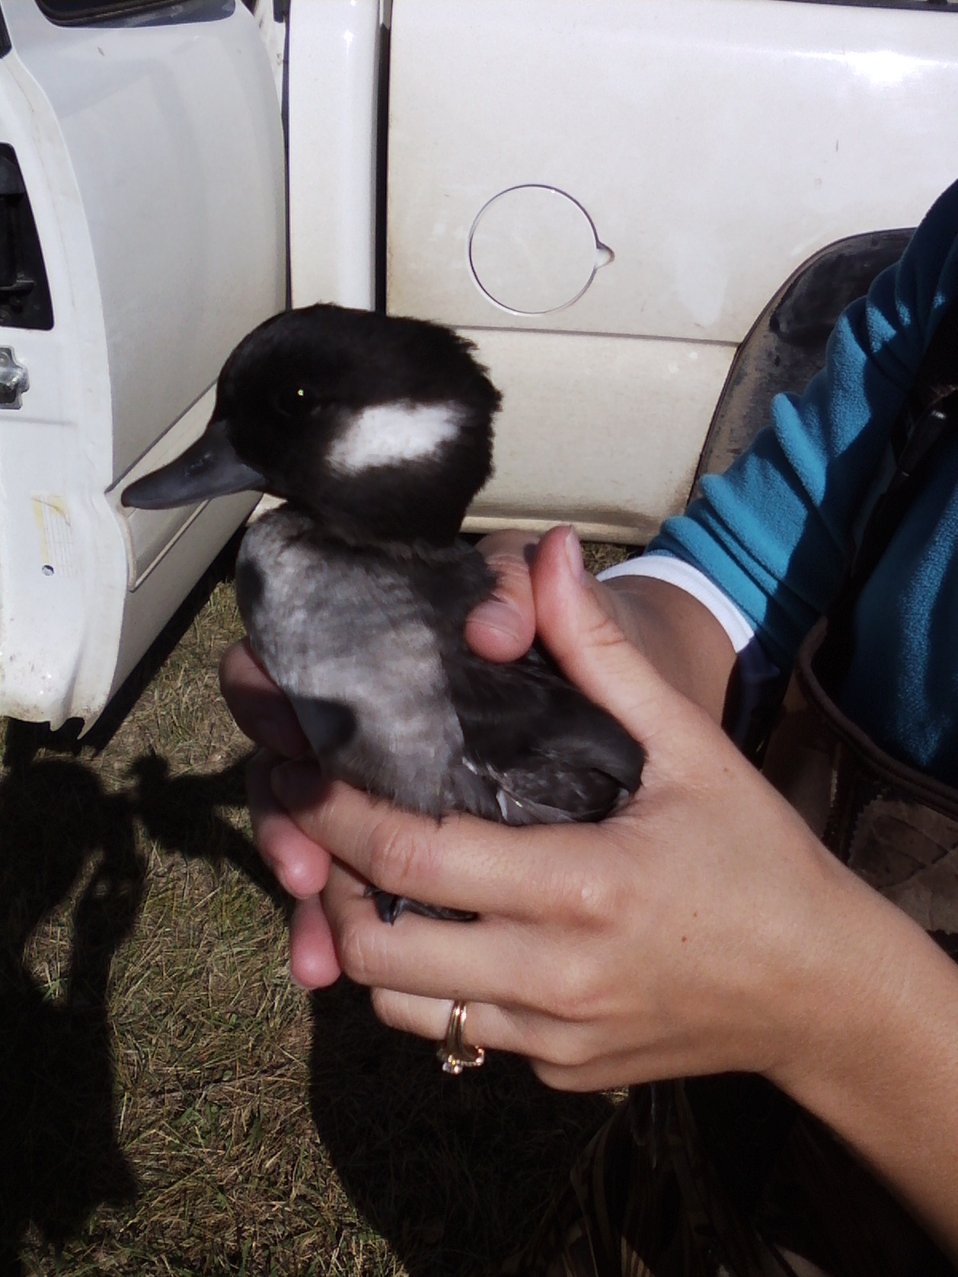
Waterfowl Banding on Bowdoin NWR

Banding waterfowl on Bowdoin NWR
Female Bufflehead